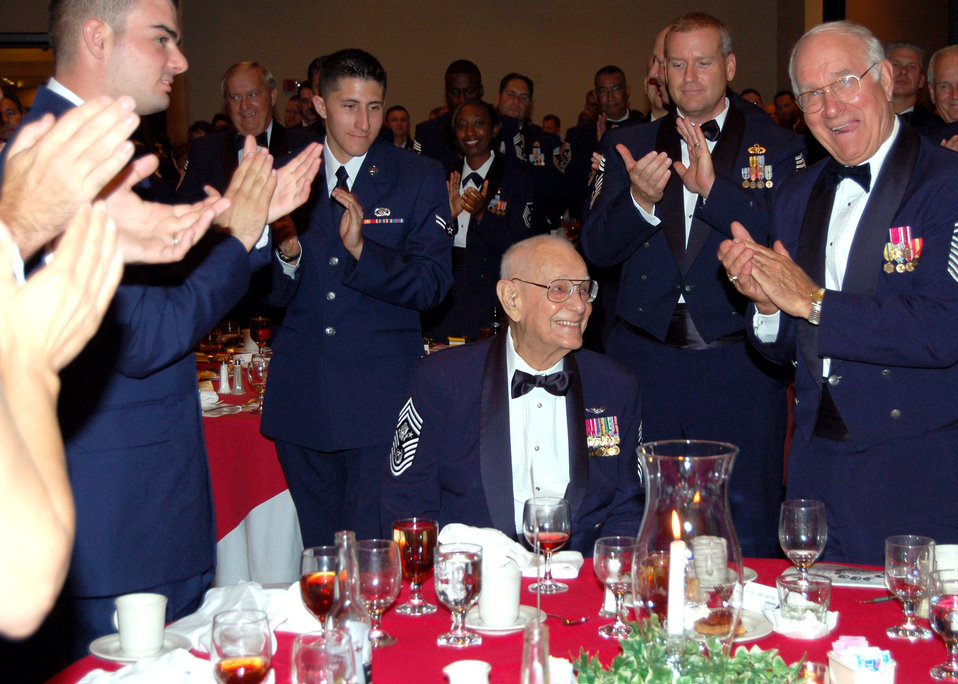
Airmen recognize impact of enlisted heritage

The first Chief Master Sgt. of the Air Force Paul Wesley Airey gets a standing ovation during the Senior Enlisted Leaders Conference Heritage Dinner July 26 in Montgomery, Ala.